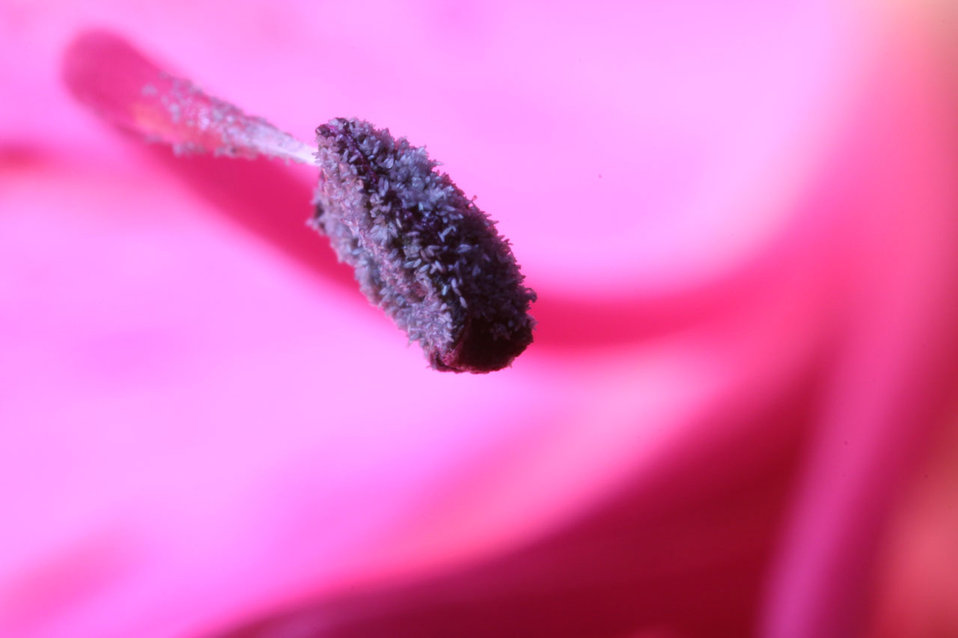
Alstroemeria

Stamen of an alstroemeria flower.